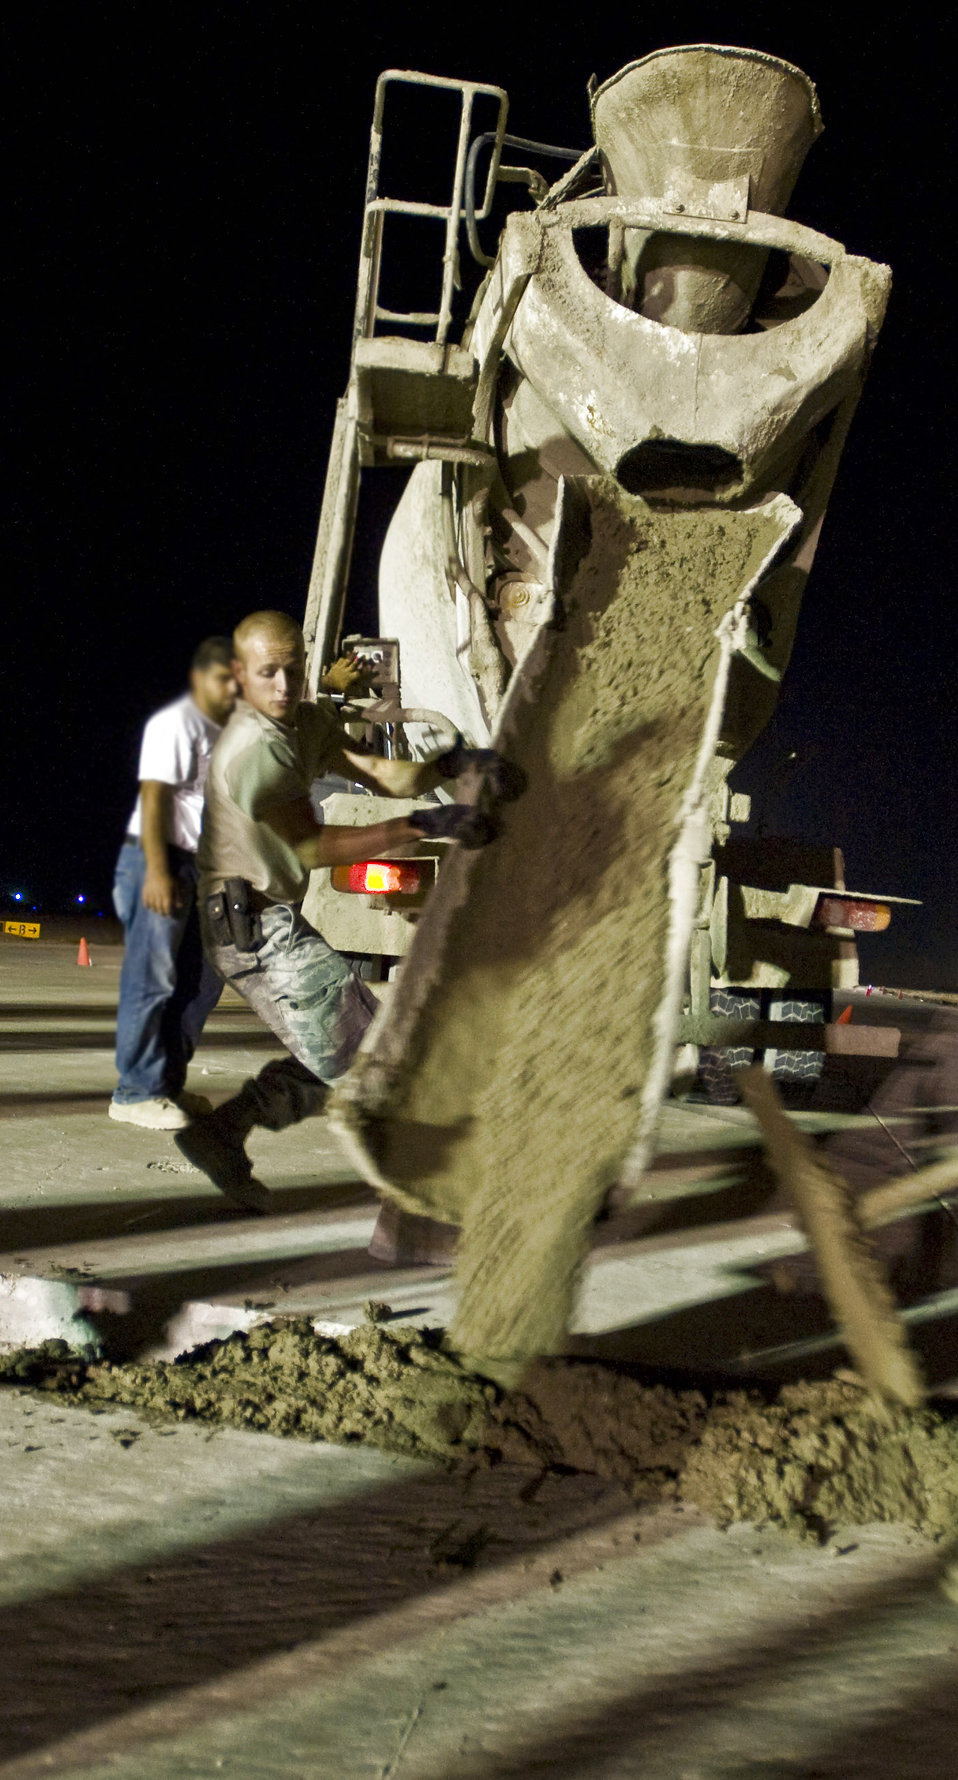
Solid foundation

Senior Airman Ian Newkirk moves cement to evenly fill holes on a taxiway Sept. 22 at Ali Base, Iraq. Extreme heat, along with normal wear and tear, can damage portions of the flightline, making it unsafe for aircraft. Airman Newkirk, a pavements and construction equipment apprentice with the 407th Expeditionary Civil Engineer Squadron, is deployed from Malmstrom Air Force Base, Mont.